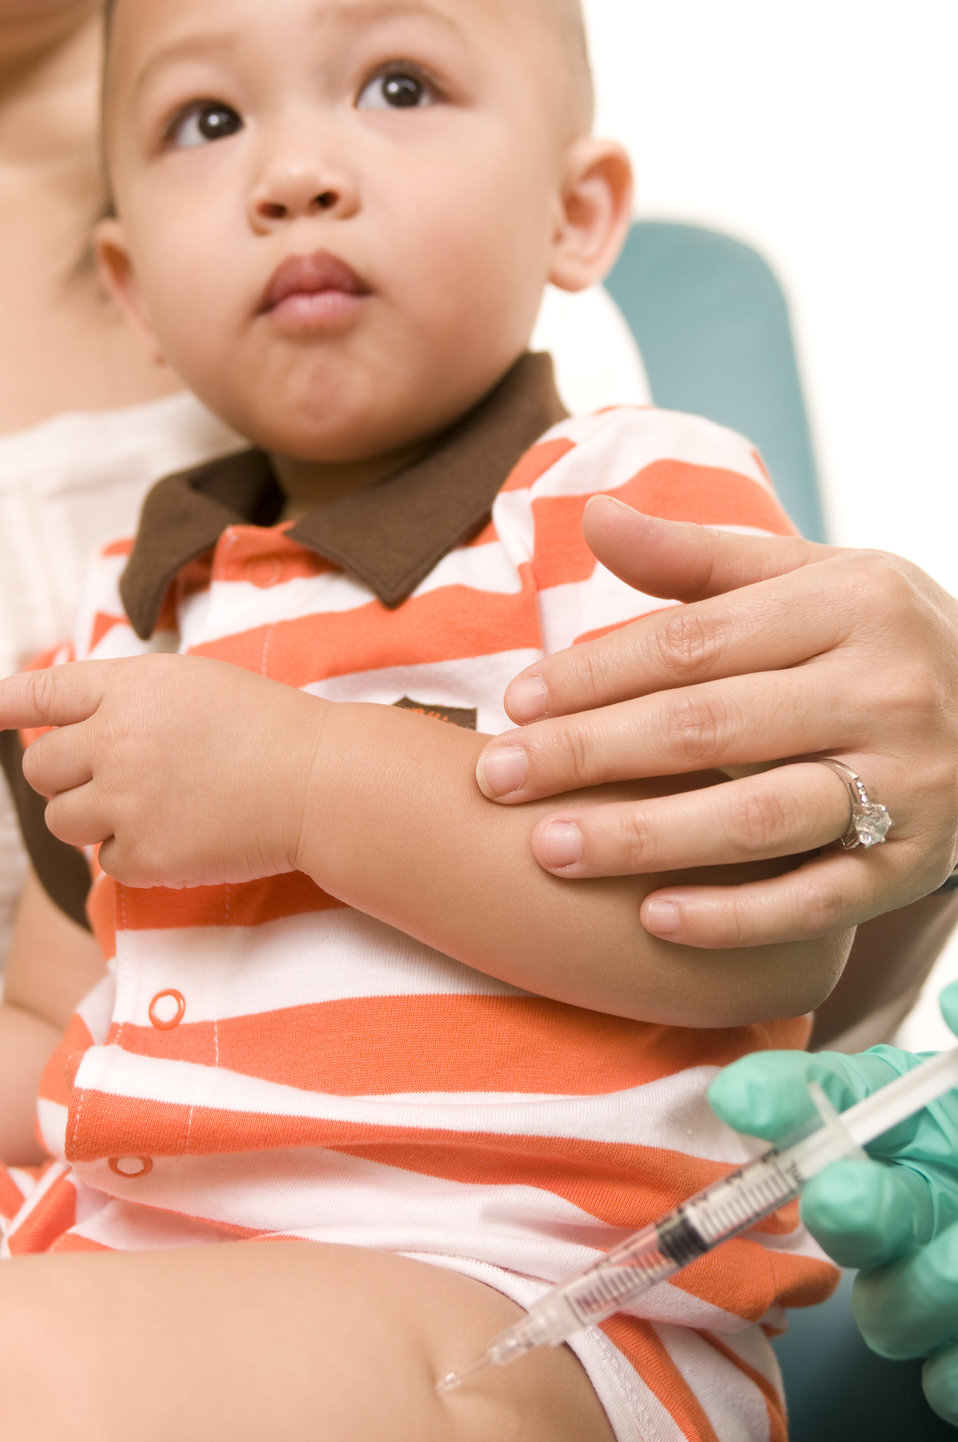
This image depicts a young boy who was receiving an injection in his left lateral thigh muscle. This is known as an intramuscular injection, and in this case, was delivering the requisite vaccination appropriate for his age group. See the link below, which will take you to the Centers for Disease Control's vaccination schedule for children based on their age groups.